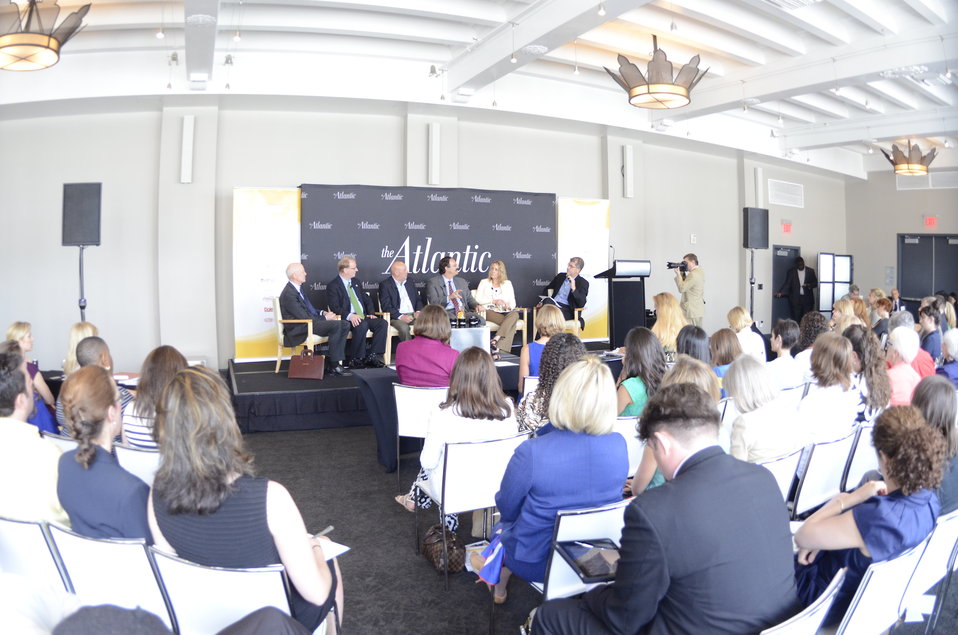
At the 3rd Annual Food Summit, guest panelists (L to R) Betty Freyhof Johnson Class of 1944 Professor of Political Science, Wellesley College and Associate, Weatherhead Center for International Affairs, Harvard University Robert Paarlberg, Chief Executive Officer, National Pork Board Chris Novak, Executive Director, Rodale Institute Mark Smallwood, President and Chief Executive Officer, World Food Program USA Rick Leach, and Executive Editor, Whole Living, and Adjunct Professor, Columbia University Graduate School of Journalism Jocelyn Zuckerman discuss Sustainable Agriculture and Feeding a World of 9 Billion at the W Hotel in Washington, D.C. on Thursday, May 24, 2012.